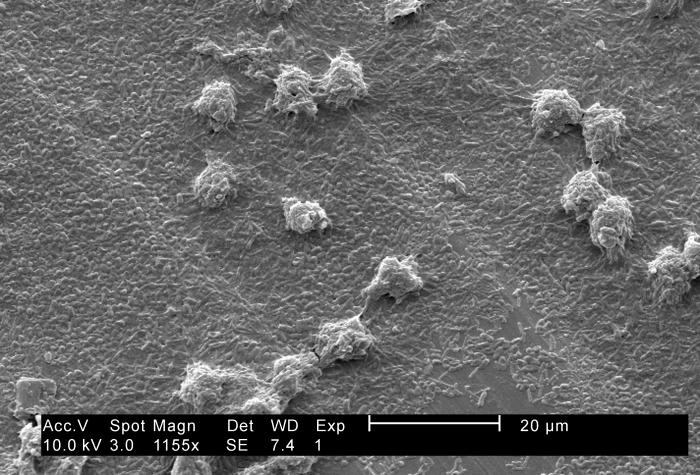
Under a moderately-high magnification of 1155X, this 2002 scanning electron micrograph (SEM) revealed some of the ultrastructural morphology exhibited by a number of Hartmannella vermiformis amoebae trophozoites.